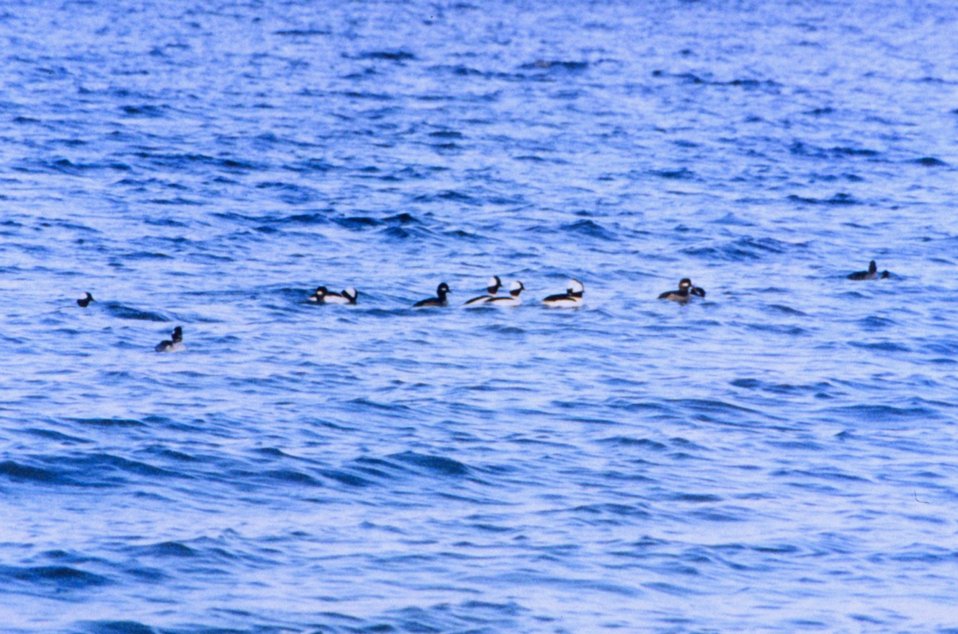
A flock of Buffleheads cruising the Patuxent River.